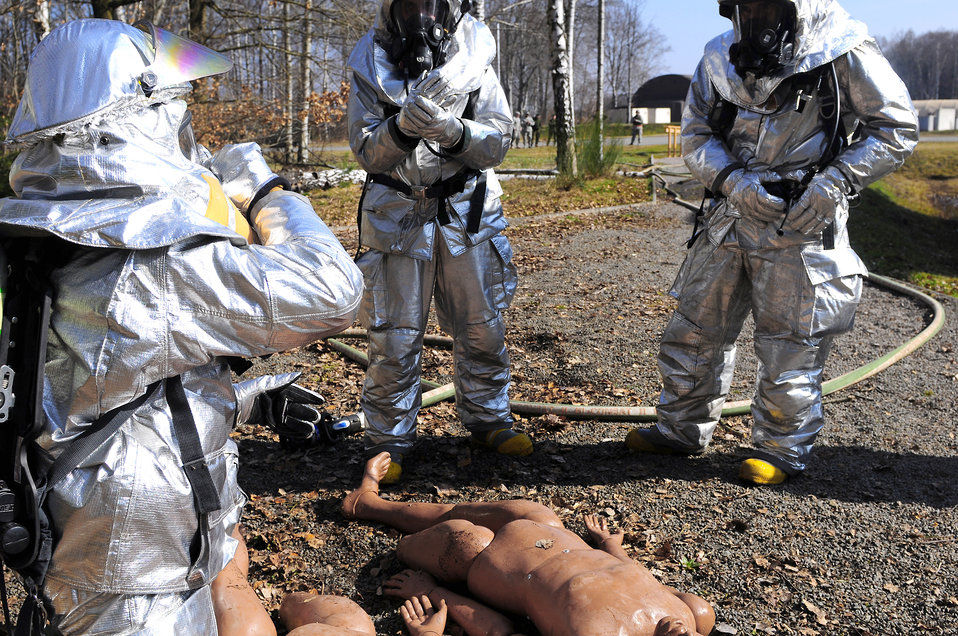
Silver Flag

Air Force firefighters perform a simulated